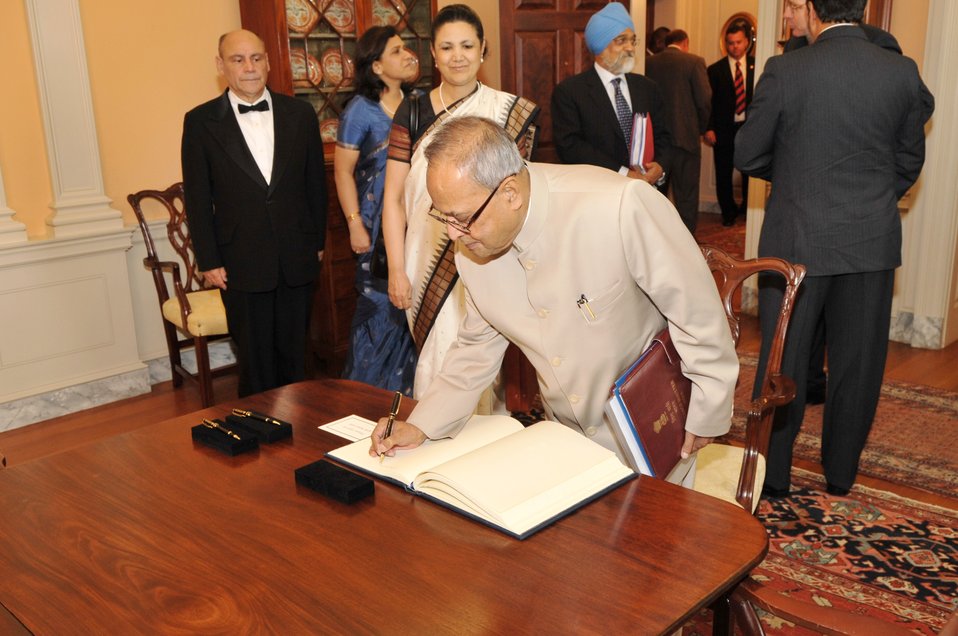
Indian Finance Minister Mukherjee Signs the Guest Book

Indian Finance Minister Pranab Mukherjee signs the U.S. Secretary of State's Guest Book at the U.S. Department of State in Washington, D.C., on June 22, 2010.